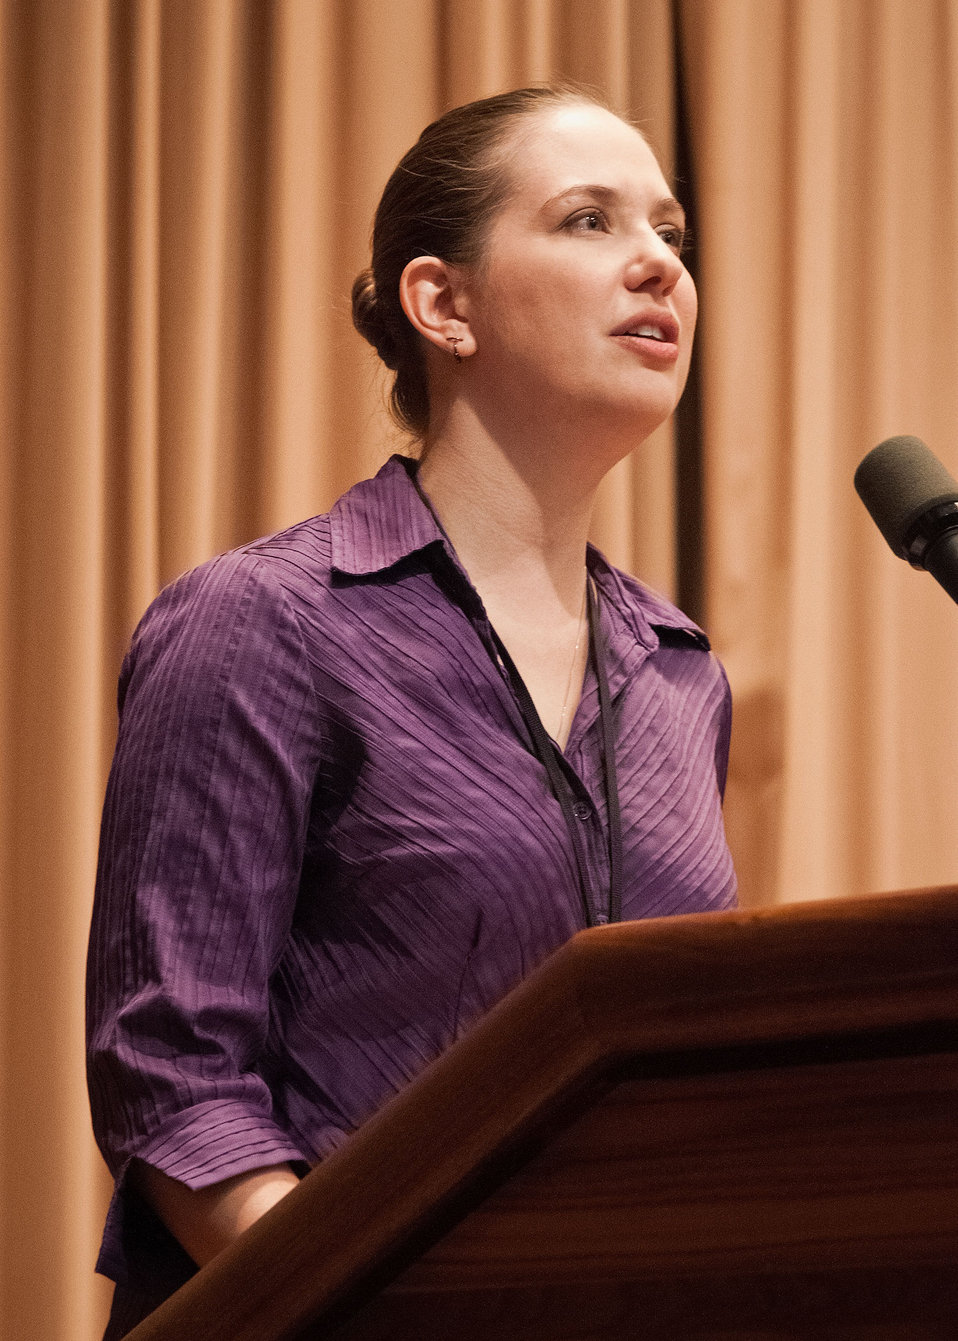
U.S. Department of Agriculture (USDA) Departmental Management Interpreting Services Bonnie Fauber sings the National Anthem at USDA's 2012 National Disability Employment Awareness Month celebration in the Jefferson Auditorium at USDA in Washington, D.C. on Wednesday, Oct. 17, 2012. The theme for the event was, “A Strong Workforce is an Inclusive Workforce: What Can You Do?